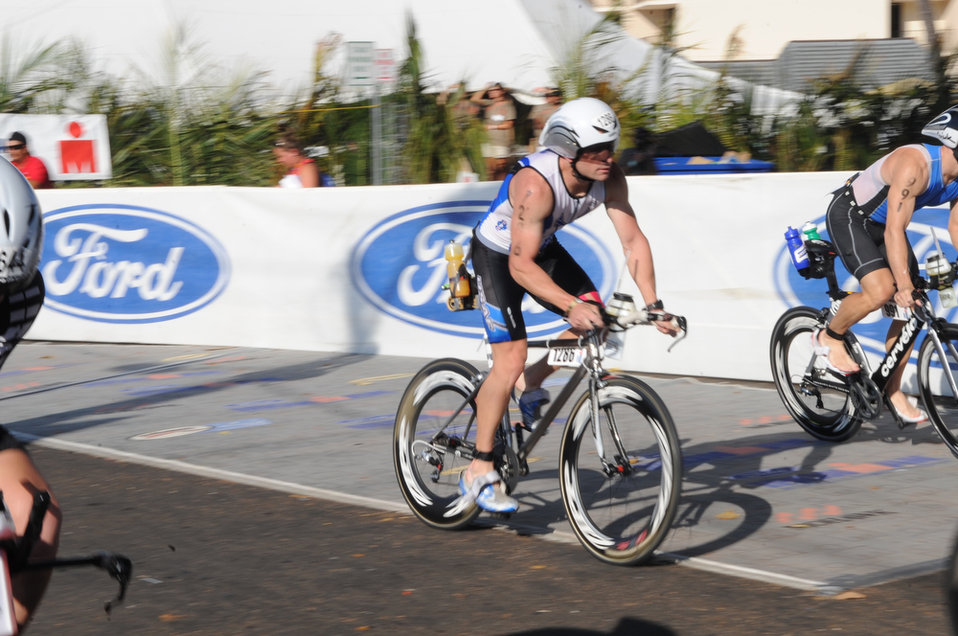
2010 Ironman World Championship

Maj. Scott Poteet speeds by the crowd after transitioning from the 2.4-mile swim to the 112-mile bike race while competing in the 2010 Ironman World Championship Oct. 9, 2010, at Kona, Hawaii. Major Poteet is assigned to the U.S. Air Force Academy in Colorado Springs, Colo. He finished with an overall time of 9:39:05.